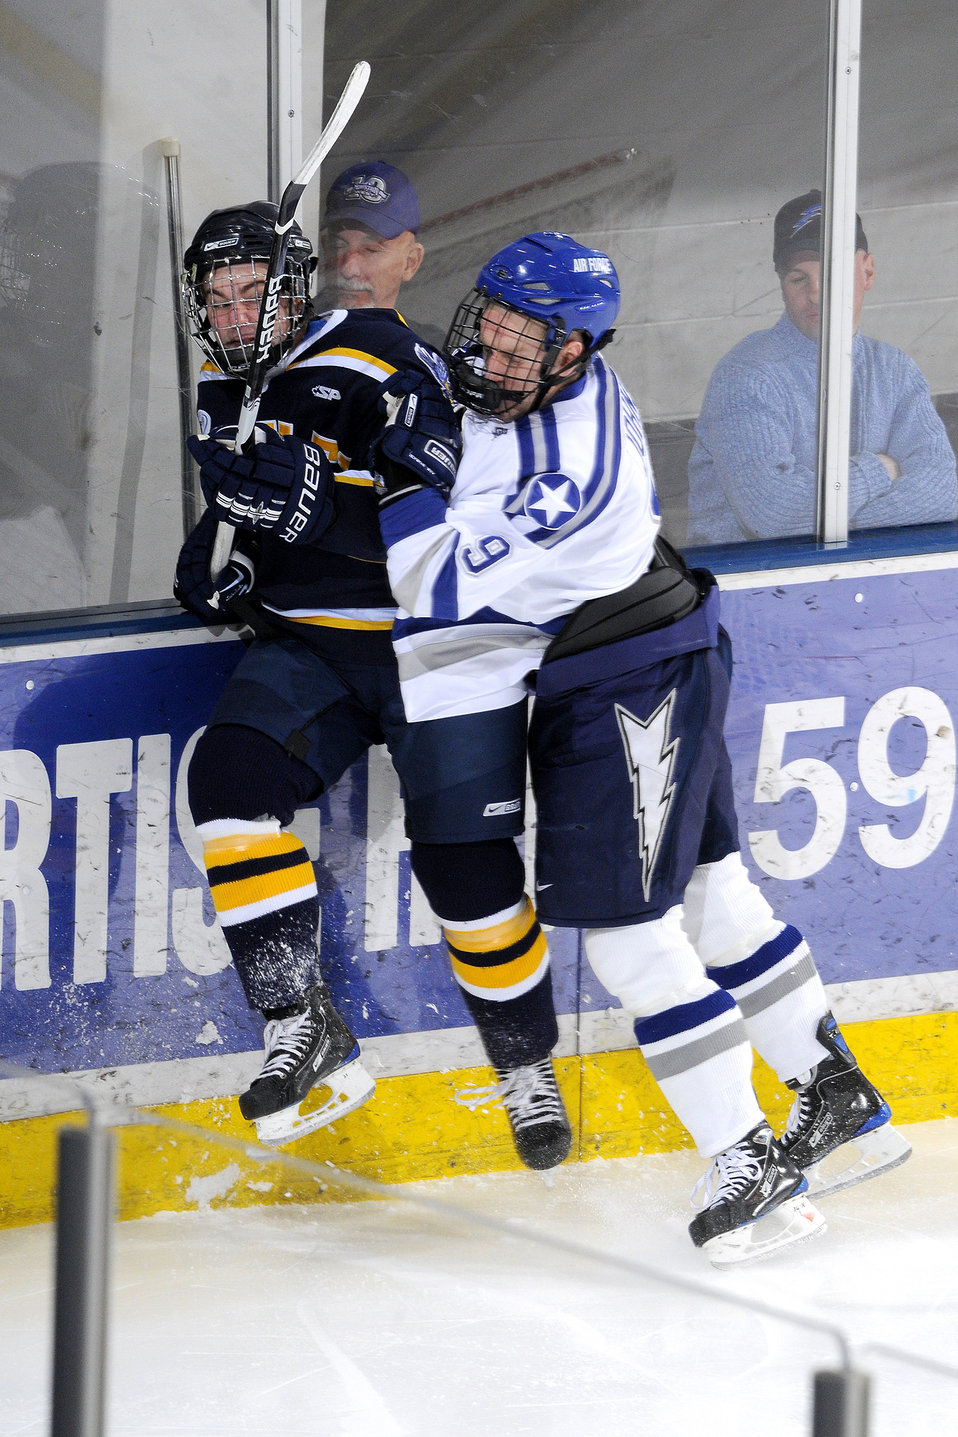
Air Force Academy

U.S. Air Force Academy, CO -- SU.S. AIR FORCE ACADEMY, Colo. -- Senior Brandon Johnson checks a Bentley player during the Air Force Academy's 3-0 victory at the Cadet Ice Arena Nov 7. Air Force is 4-5-1 overall and 4-1-1 in the Atlantic Hockey Association. Air Force plays its next four games on the road, starting with a two-game series at Holy Cross, Friday and Saturday in Worcester, Mass.